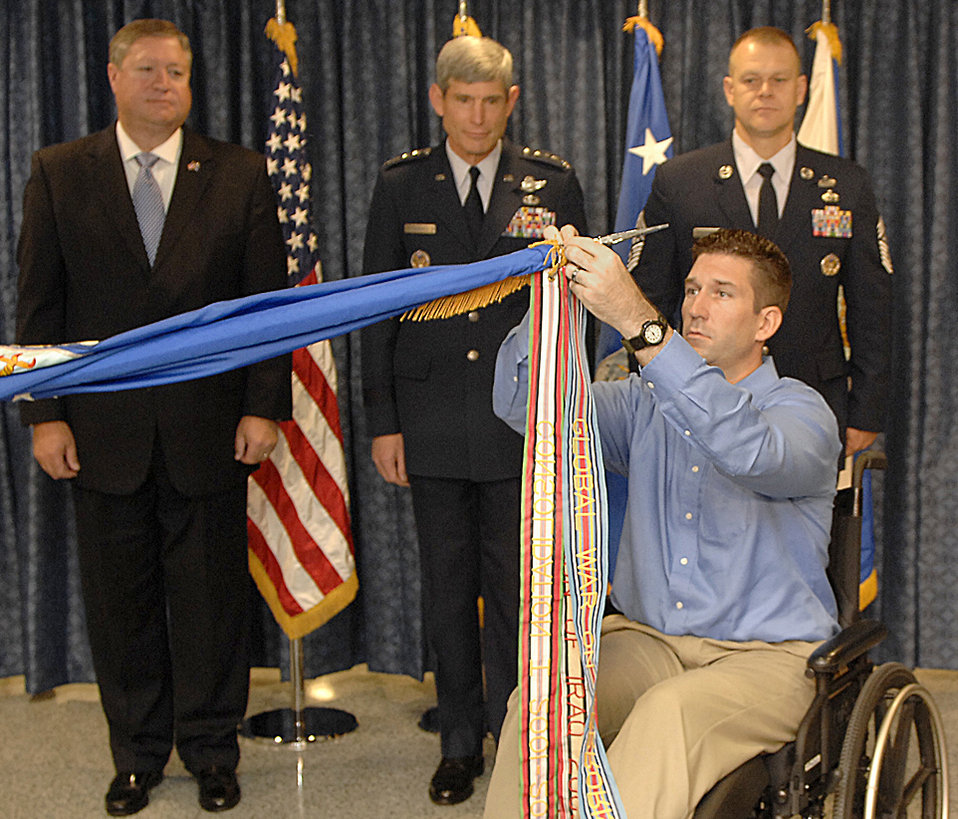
Dedication ceremony of the Airman's Hall

Tech. Sgt. Michael G. Williams hangs a campaign ribbon on the Air Force flag during the Airman's Hall dedication ceremony Sept. 17, 2009, in the Pentagon.